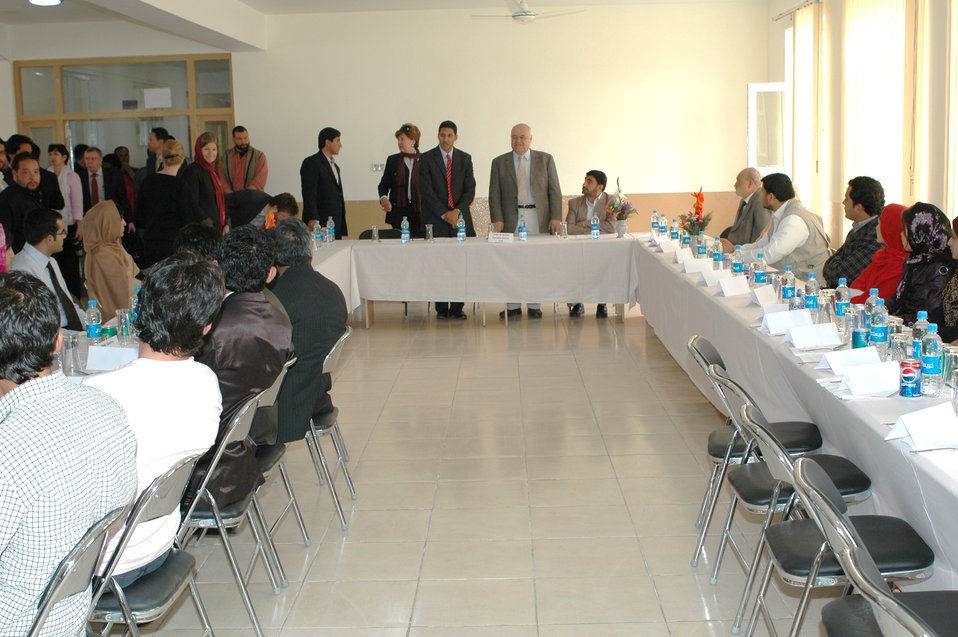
Dr Shah Visits Votech in Kabul